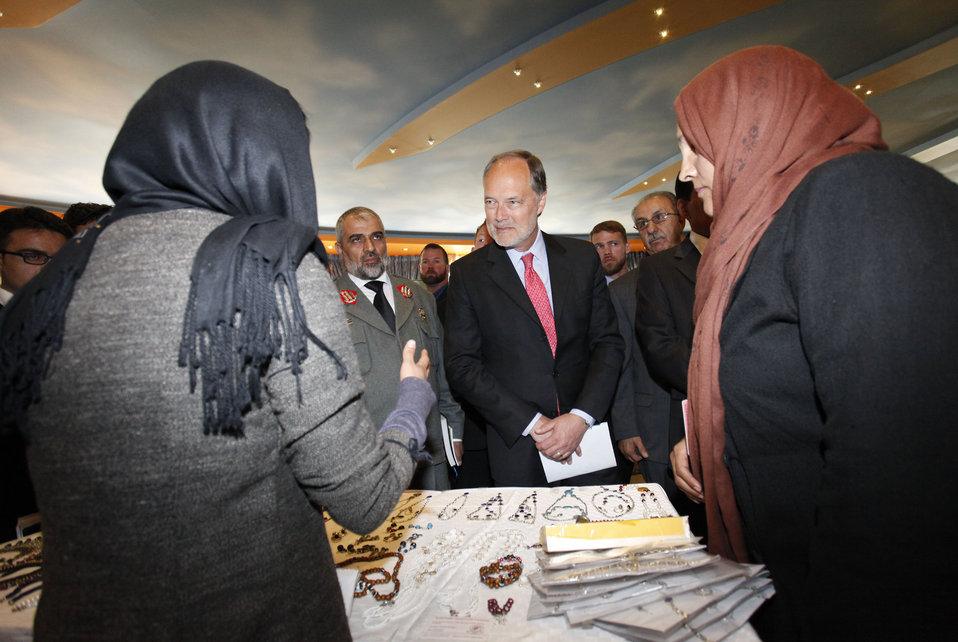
Ambassador Cunningham

U.S. Ambassador James B. Cunningham talks with vendors at the Second Access to Finance Exhibition in Kabul on Tuesday, October 29, 2013. Thousands of business representatives from across Afghanistan attended the exhibition promoting branchless banking and electronic payments.